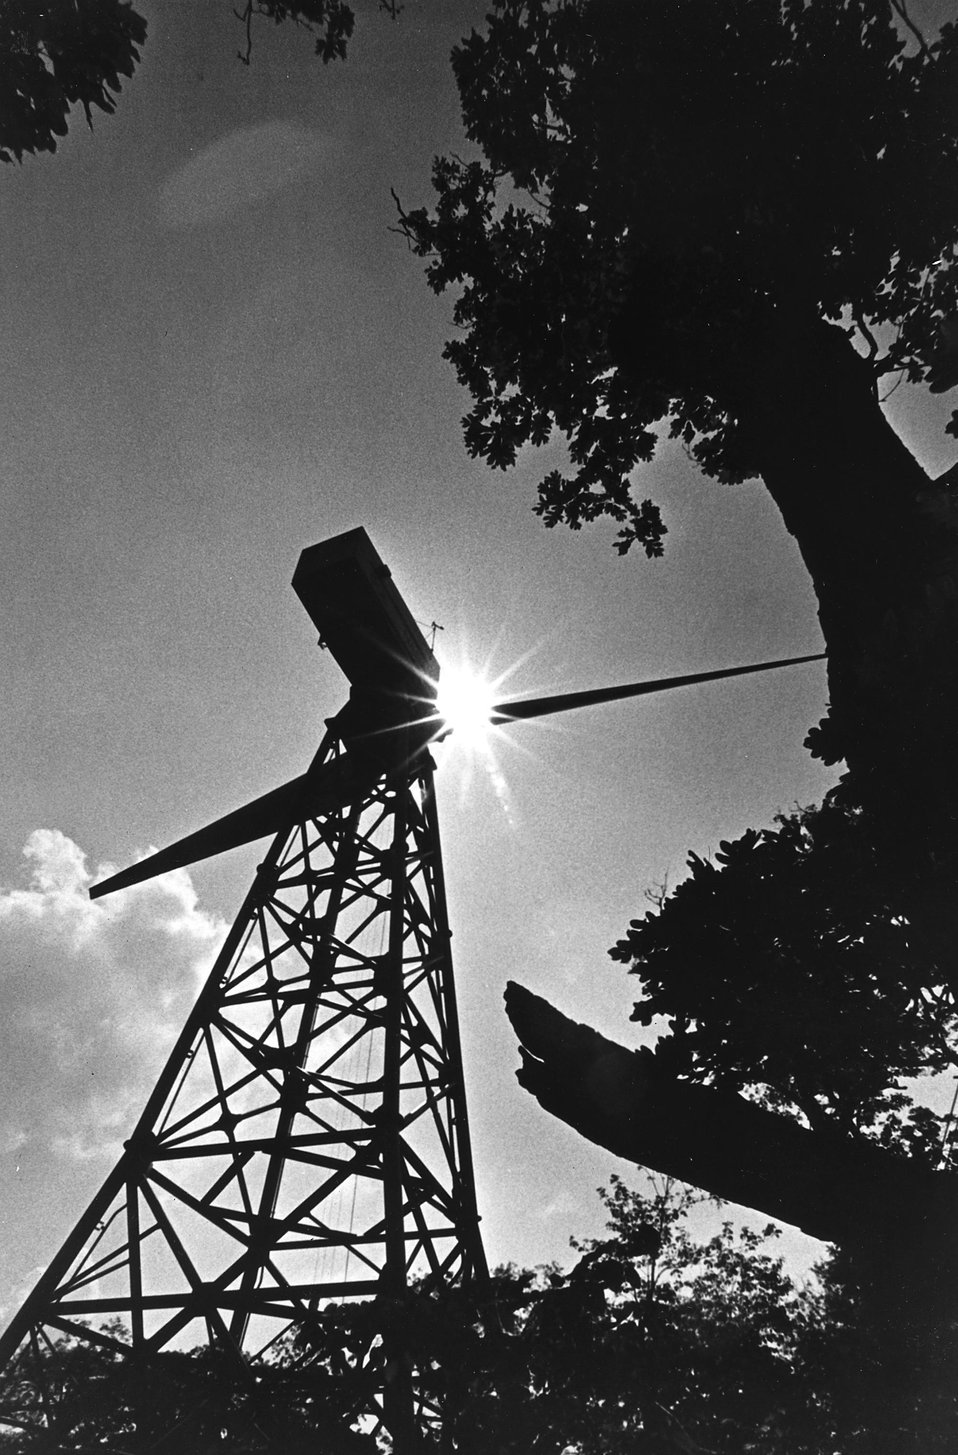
World's Largest Wind Turbine Being Tested In North Carolina. On July 11, 1979, the world's largest wind turbine generator with blades as long as the wingspan of a Boeing 707 was dedicated near Boone, North Carolina. c. 1979